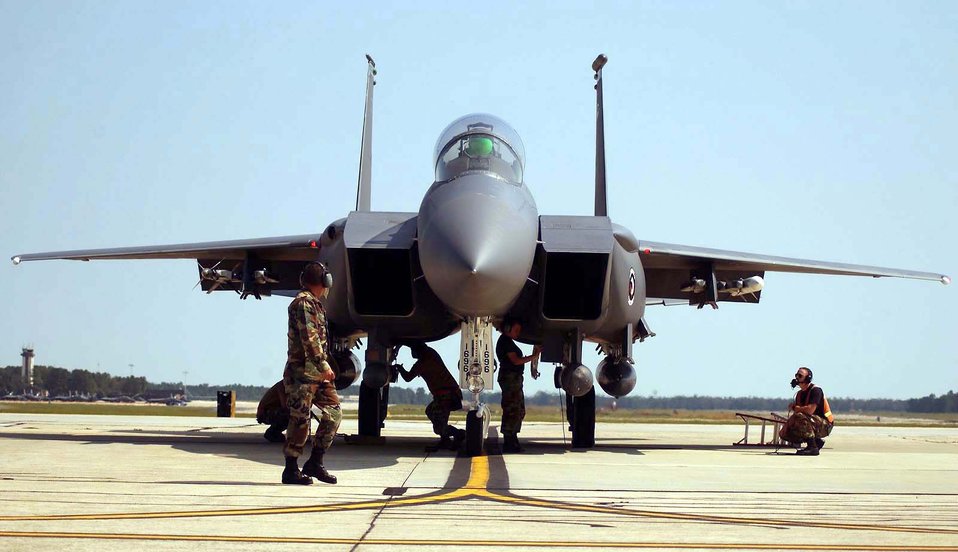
Flight check

SEYMOUR JOHNSON AIR FORCE BASE, N.C. -- Airmen of the 4th Aircraft Maintenance Squadron check an F-15E Strike Eagle Sept. 16 before the jet is flown to Tinker Air Force Base, Okla. F-15Es here are being evacuated as part of the base's preparation for Hurricane Isabel.